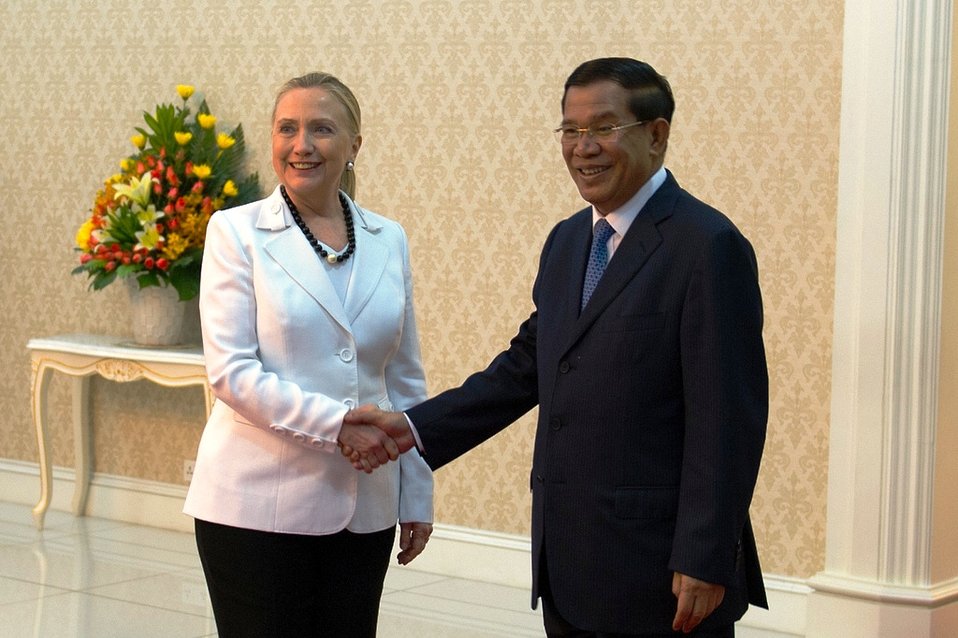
Secretary Clinton Shakes Hands With Cambodian Prime Minister Hun Sen

U.S. Secretary of State Hillary Rodham Clinton shakes hands with Cambodian Prime Minister Hun Sen before their meeting in Phnom Penh, Cambodia, on July 11, 2012.